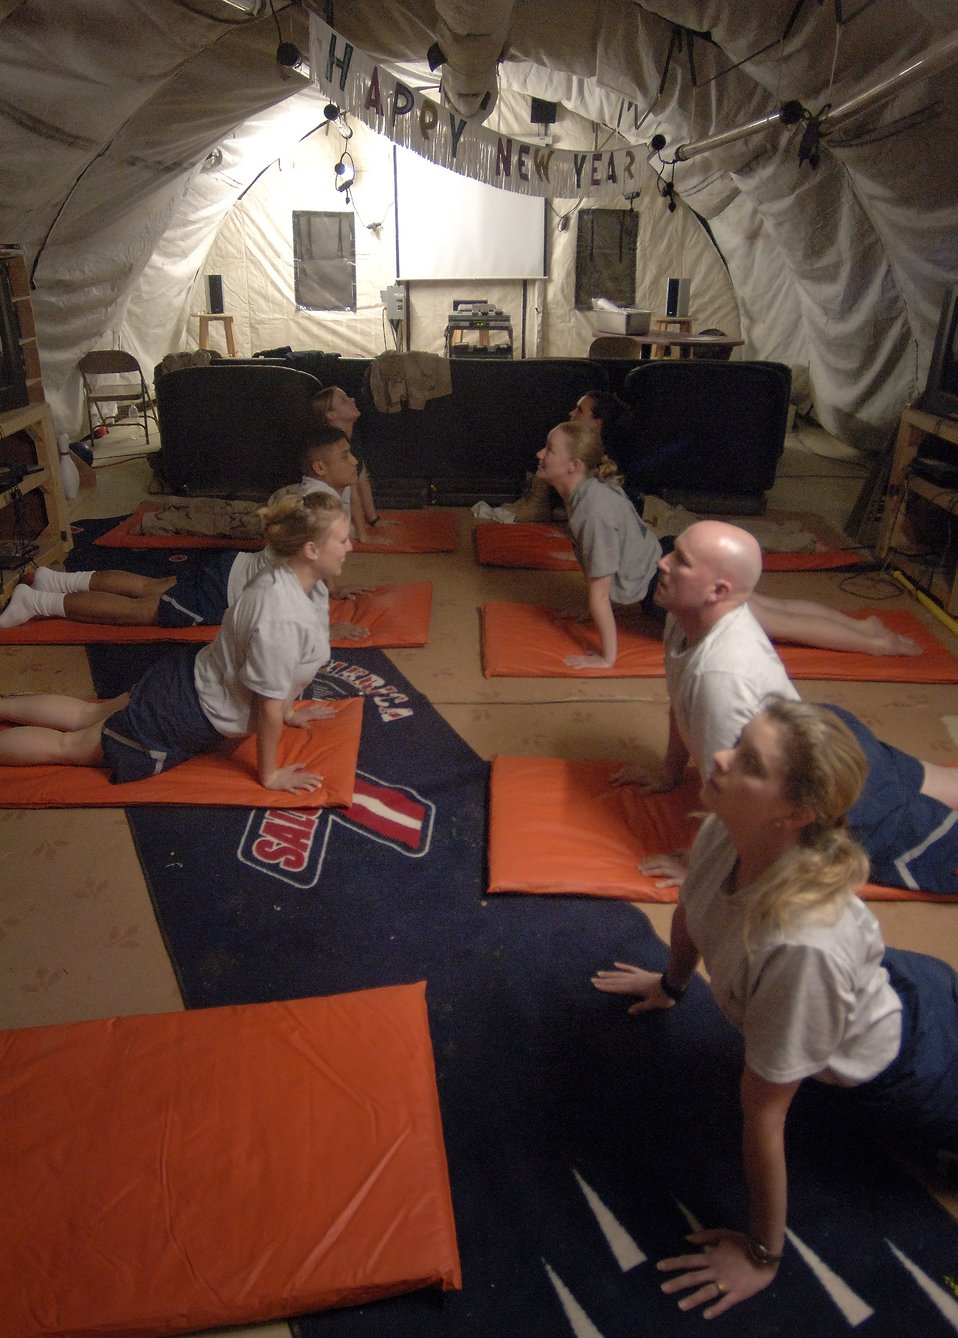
Yoga health

BALAD AIR BASE, Iraq (AFPN) -- Staff Sgt. Bonnie McKinley (left) leads Airmen and Soldiers in a yoga class during a break in her 15-hour shift at the Air Force Theater Hospital here. The 5-foot-4-inch respiratory therapist with the 332 Expeditionary Medical Group weighs 140 pounds. But, a few years ago, she weighed 215 pounds after a pregnancy. She attributes her weight loss and fitness increase to the practice of yoga and a healthy diet. She is deployed from Sheppard Air Force Base, Texas.